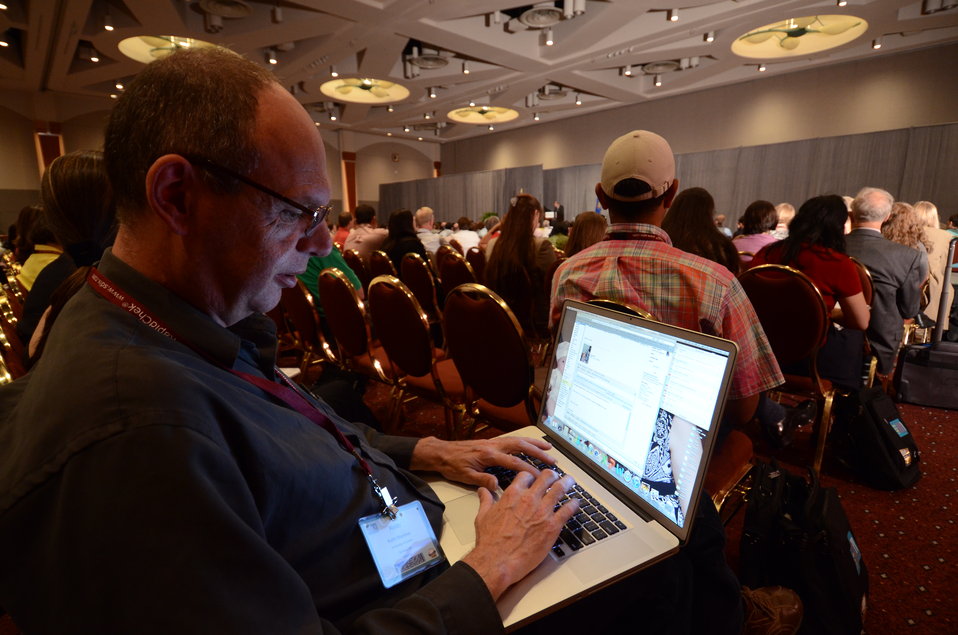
A member of the press takes notes as Agriculture Secretary Tom Vilsack speaks at the International Association for Food Protection (IAPP) 100th annual meeting in Milwaukee, WI, on Wednesday, August 3, 2011. IAPP is committed to providing members worldwide with a forum to exchange information on protecting the global food supply.